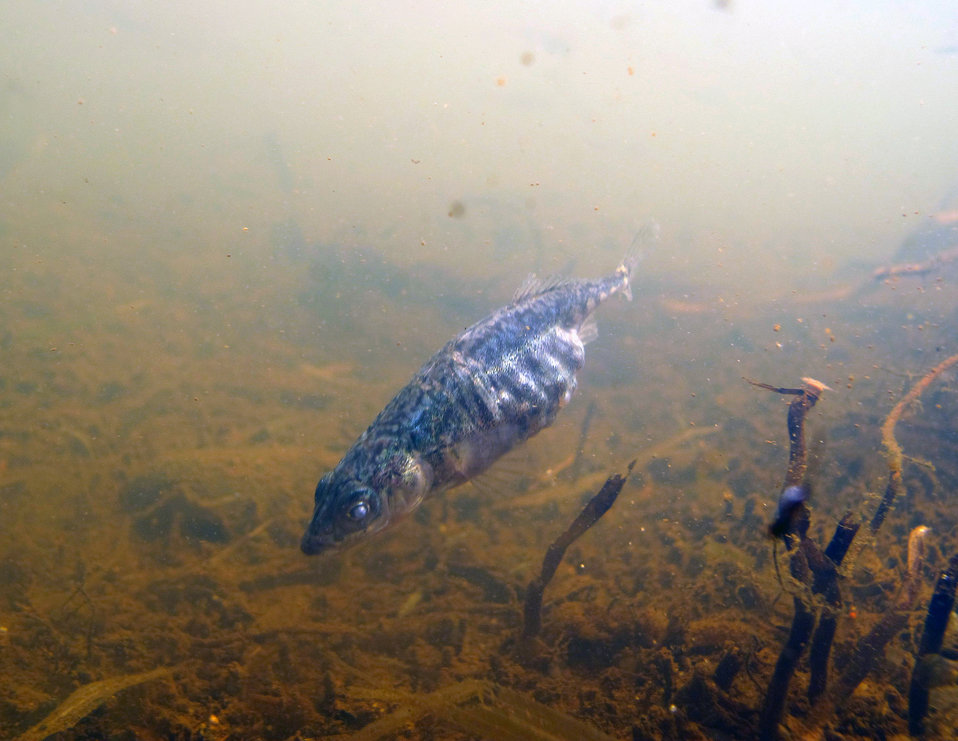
3 spine stickleback female

Beluga Lake in Homer, AK.